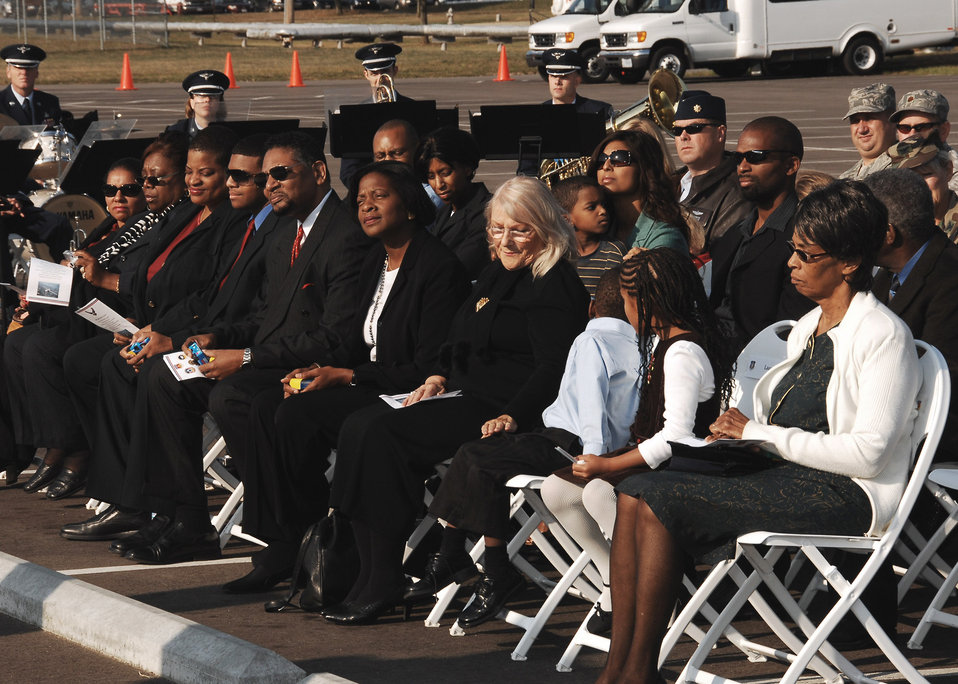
Building dedication honors Airman killed on 9/11

Members of the Homer and Thorpe families attend the Operations Building Dedication Oct. 4 at Wright-Patterson Air Force Base, Ohio. The building is named in honor of Maj. LeRoy W. Homer Jr., who died Sept. 11, 2001, while serving as the first officer on United Airlines Flight 93.